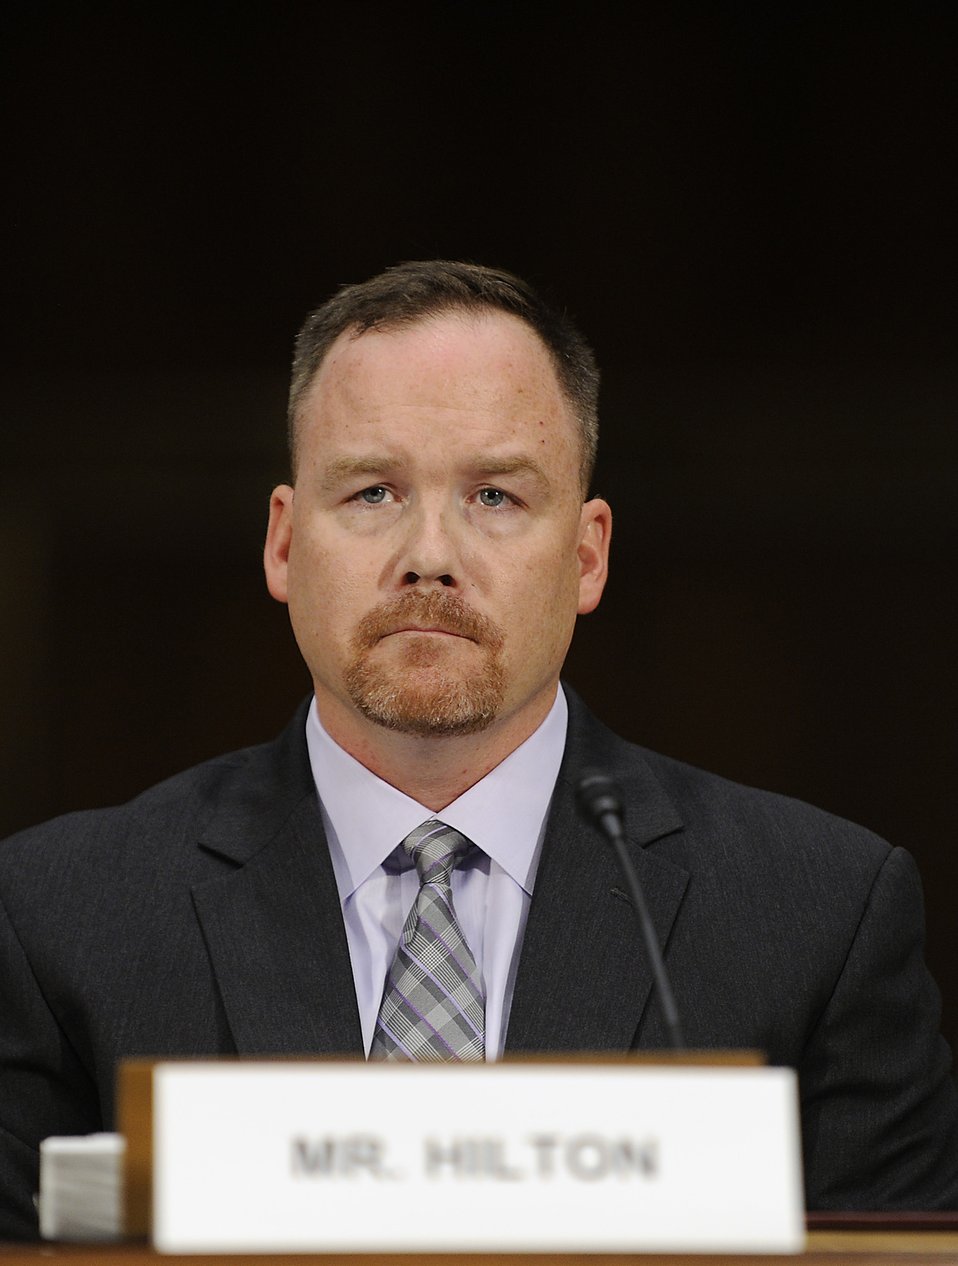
Air Force spouse testifies on military families with special needs

Jeremy Hilton testifies before the U.S. Senate Armed Services Subcommittee on Personnel in Washington, D.C., June 21, 2012. Hilton, who is married to Lt. Col. Renae Hilton, is an advocate for military families with special needs and is the Military Spouse of the Year for 2012.